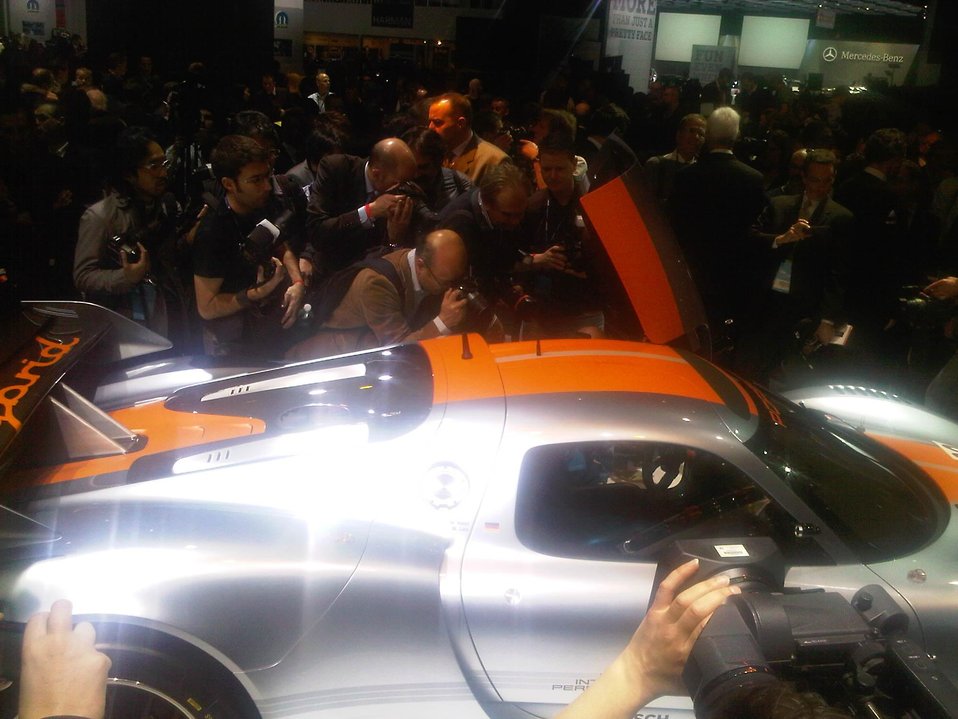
The 2011 Detroit Auto Show